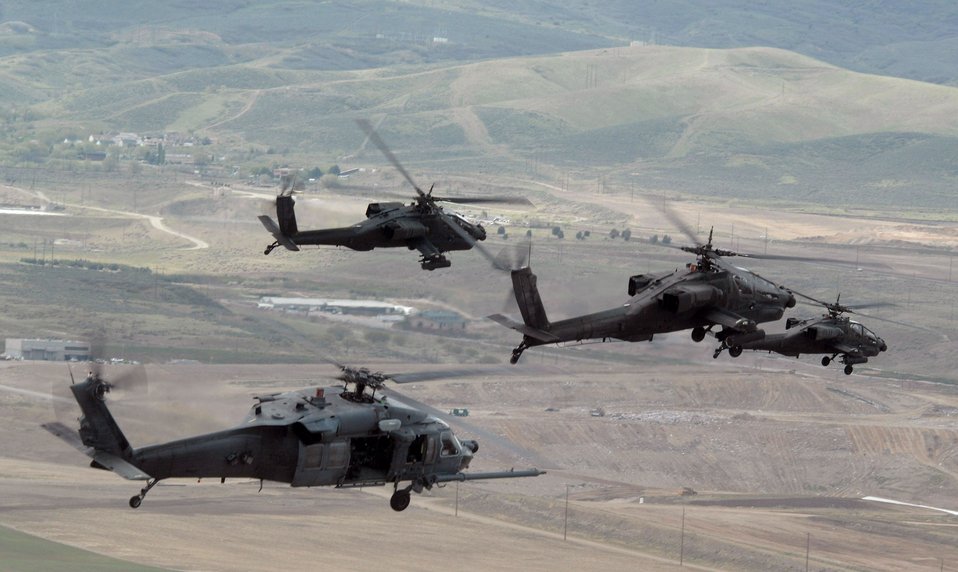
Search and rescue training

An Air Force HH-60 Pave Hawk (lower left) from Nellis Air Force Base, Nev., heads out to the Utah Test and Training Range with a formation of Army AH-64 Apaches during a combat search and rescue integration exercise held May 2 to 5 in Sandy, Utah. Members of the 34th Weapons Squadron from Nellis AFB led the search and recovery training. The objective of the exercise was to expand expertise and integration with Utah's 211th Aviation Group AH-64 Apache Joint Rotary Wing, 4th Fighter Squadron F-16 Fighting Falcon Striker assets, special operations forces and conduct extensive joint CSAR operations against surface-to-air threats.